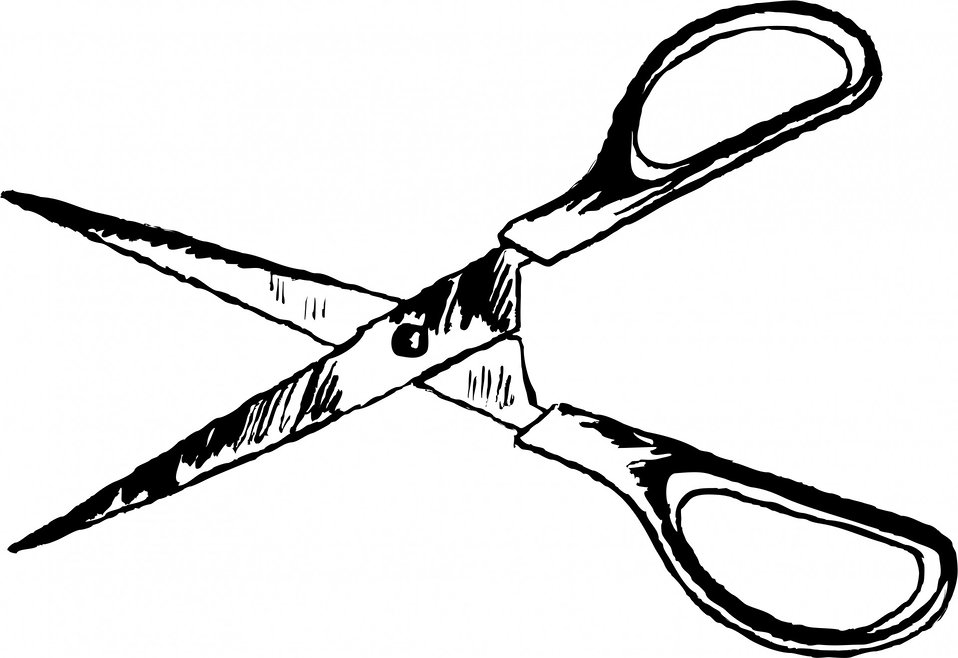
Scissors clipart

Black and white scissors illustration..